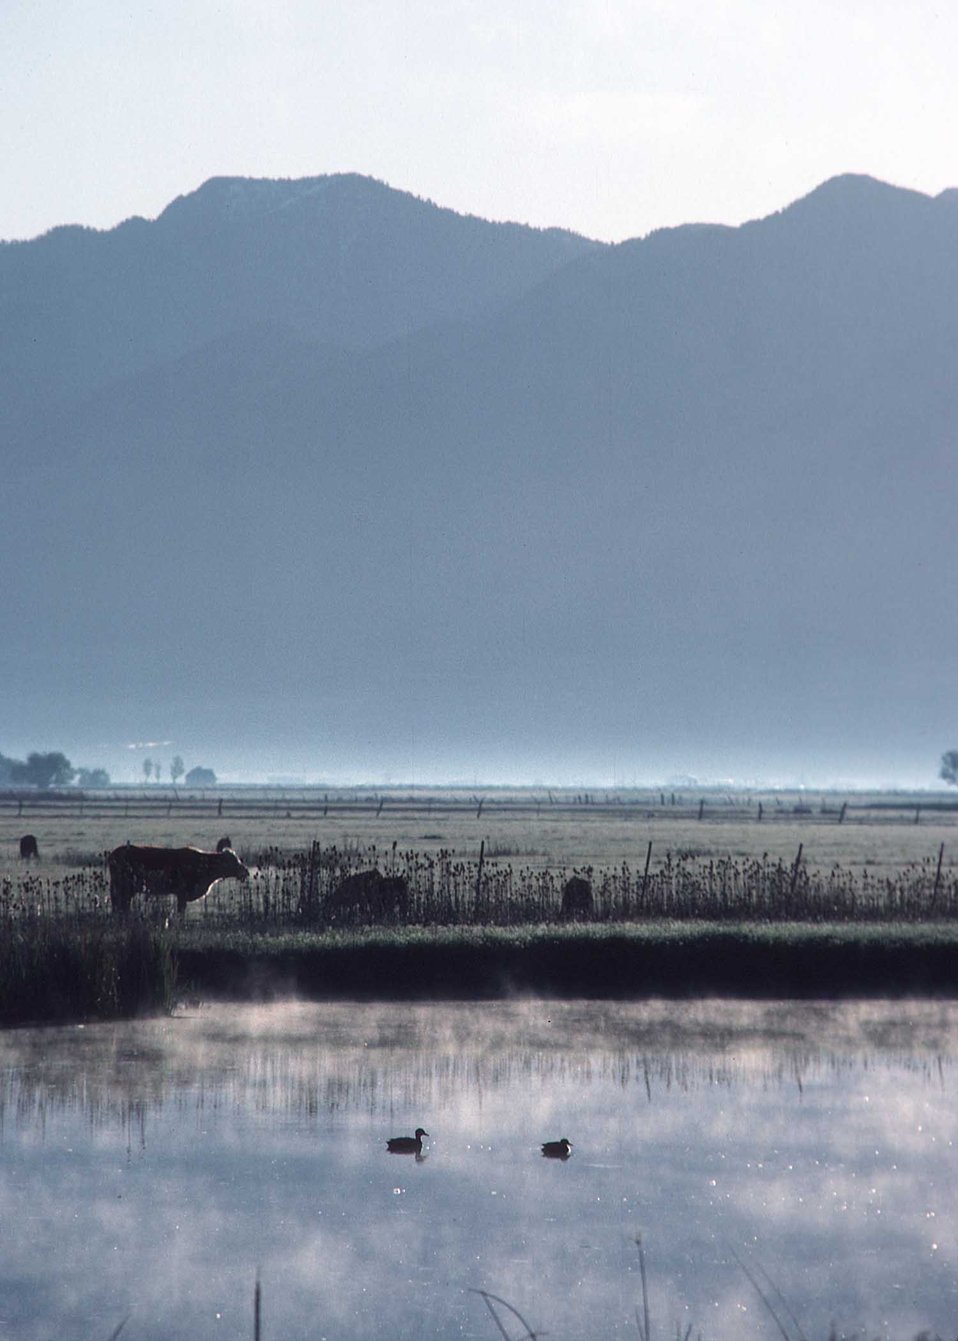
Wetlands provide a haven for migrating ducks, geese and other water fowl in Cache County, Utah.